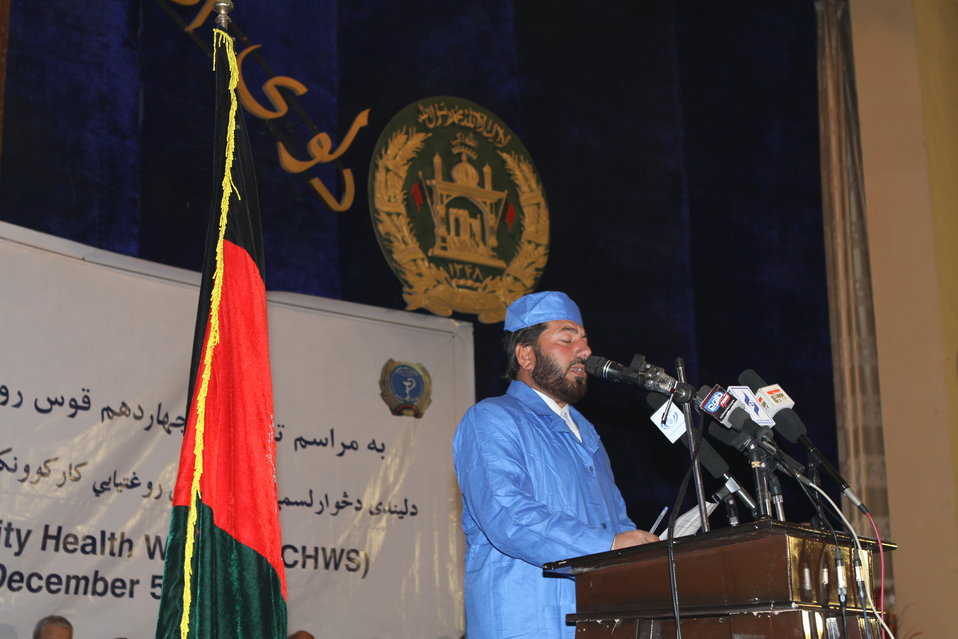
Community Health Workers Celebrated

Kabul, Afghanistan | December 5, 2010 — In support of the United Nations designated International Volunteer Day for Economic and Social Development, Afghanistan’s Ministry of Public Health celebrated its annual Community Health Worker Day today. Acting Minister of Public Health Dr. Suraya Dalil, USAID Senior Deputy Mission Director Robert Hellyer, other government officials, and international donors joined in recognizing the critical contribution of community health workers in Afghanistan and encouraging them to continue their voluntary support to their communities.
The event praised the contributions of the more than 22,000 volunteers throughout the country who deliver community level health-education, counseling, and services out of village health posts located in private homes. The Ministry of Public Health envisioned that community-based healthcare programs will actively encourage communities and families to adopt healthy lifestyles and behaviors, and provide families access to high quality and socially acceptable preventative medicine and life-saving services.
“We have 22,000 community health workers in Afghanistan that are able to implement the basic and standard medicines. They all have been trained through a job description,” said Minister Dalil. Addressing the health workers, she added, “I am proud and feel powerful that I have people like you.”
USAID-funded health projects collaborate closely with the Ministry of Public Health to improve the health and nutritional status of Afghans, provide quality primary healthcare, and promote healthy behaviors at the community and household-levels. USAID supported the training of more than 9,000 of the volunteer community health workers currently working in Afghanistan.
“On behalf of the American people, I congratulate the Community Health Workers for their diligence to gain the skills and knowledge necessary to serve their communities in this important role,” said USAID Senior Deputy Mission Director Hellyer. “USAID strongly supports community based health care and believes that quality community-based health services are essential to reaching Afghanistan’s Millennium Development Goals.”
To support the Basic Package of Health Services, USAID assisted in developing the community health worker training manual, helped train community health worker supervisors and master-trainers, facilitated in-service training, and produced and developed reporting tools, job aids, and education materials.